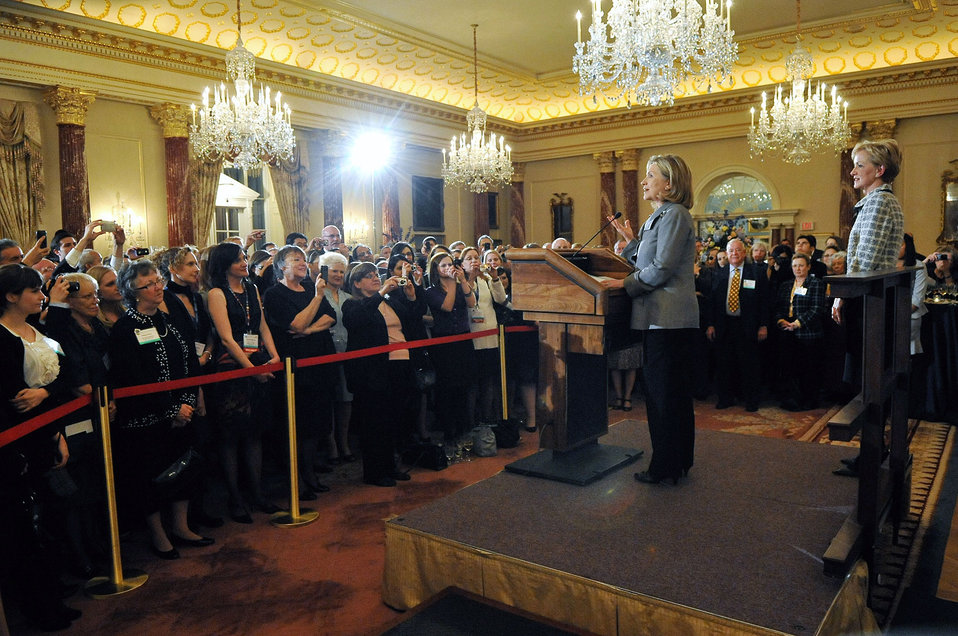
Secretary Clinton Delivers Remarks

U.S. Secretary of State Hillary Rodham Clinton, with Assistant Secretary of State for Educational and Cultural Affairs Ann Stock, delivers the welcoming remarks at the reception celebrating the National Council for International Visitors’ 50th Anniversary and the International Visitor Leadership Program’s 70th Anniversary in the Franklin Room at the U.S. Department of State in Washington, D.C., on February 17, 2011.